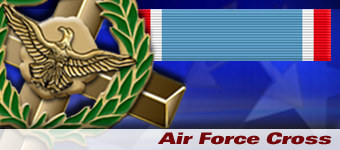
Air Force Cross